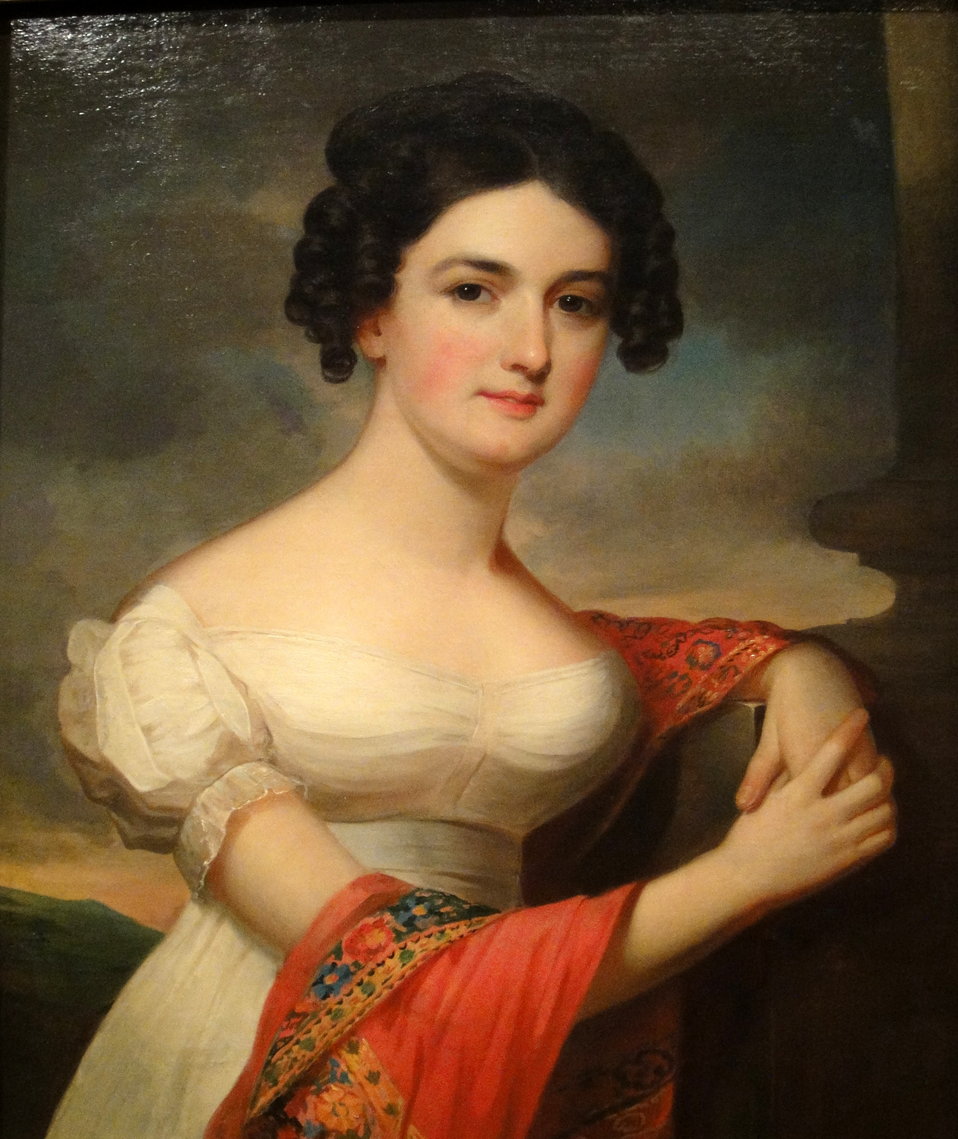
Portrait of Julianna Hazelhurst